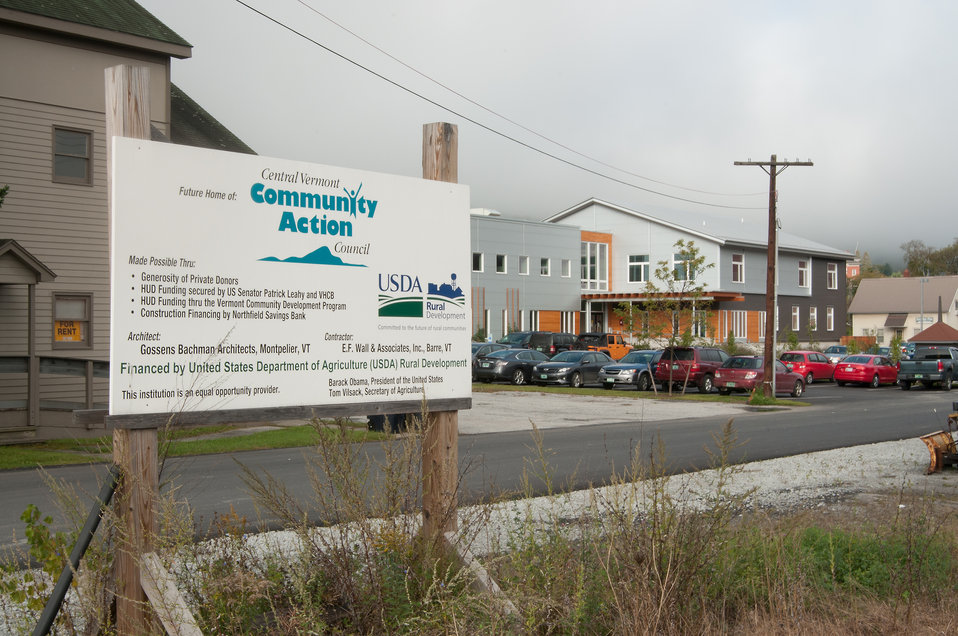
Through the assistance of a U.S. Department of Agriculture (USDA) Rural Development (RD) Community Facilities Grant the Central Vermont Community Action Council whose mission is to create economic security for low to moderate income residents in rural Central Vermont consolidated many of its programs and more than half of its employees into one campus in downtown Barre, VT on Sep. 17, 2013.